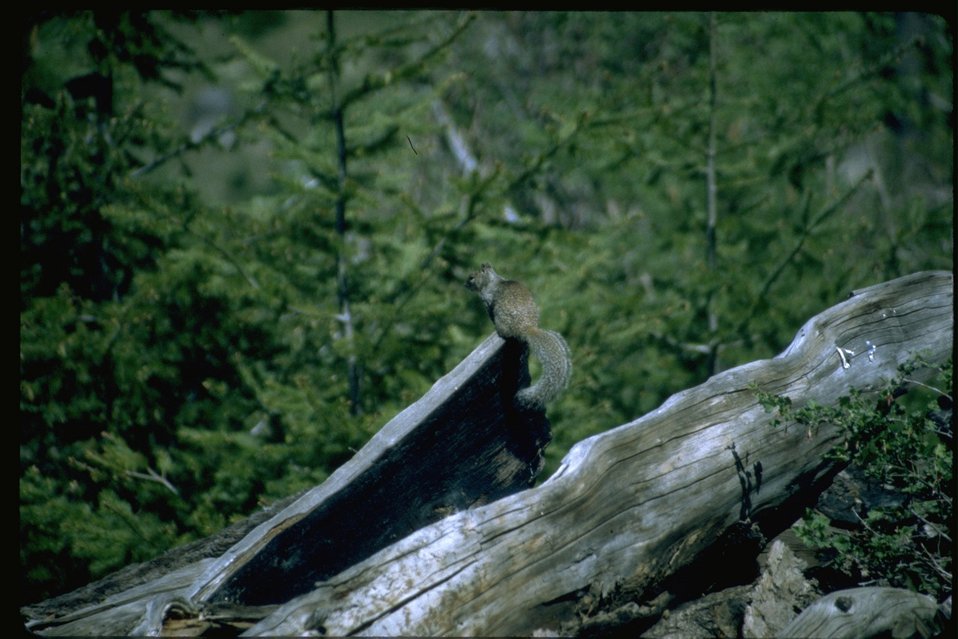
Long shot of squirrel.